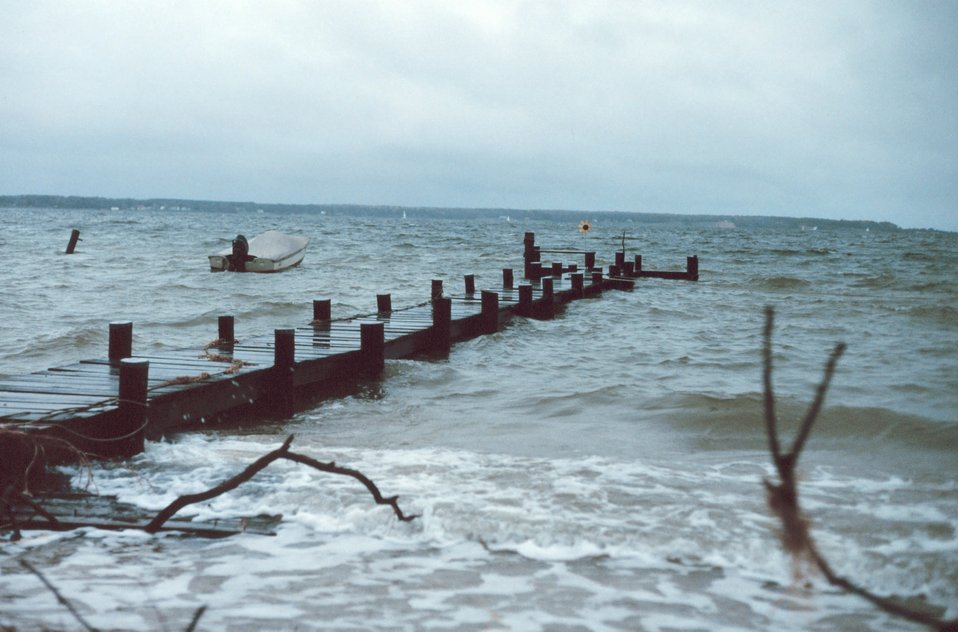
High tide and storm threaten a pier and beach along the Patuxent River.